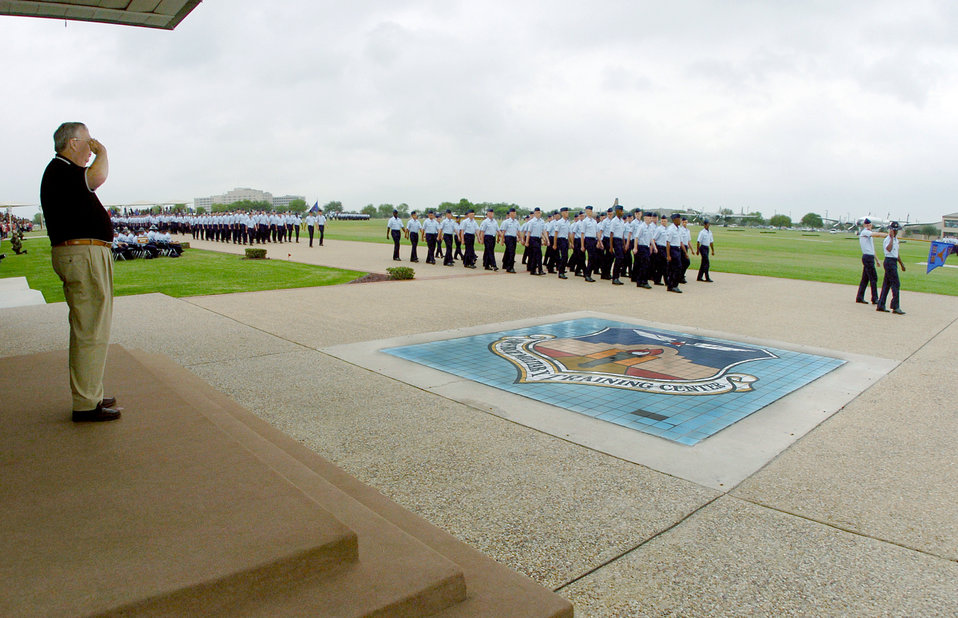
Graduation Day

LACKLAND AIR FORCE BASE, Texas -- Secretary of the Air Force Dr. James G. Roche salutes graduating Airmen as they pass in review during Basic Military Training graduation ceremonies here Oct. 22.